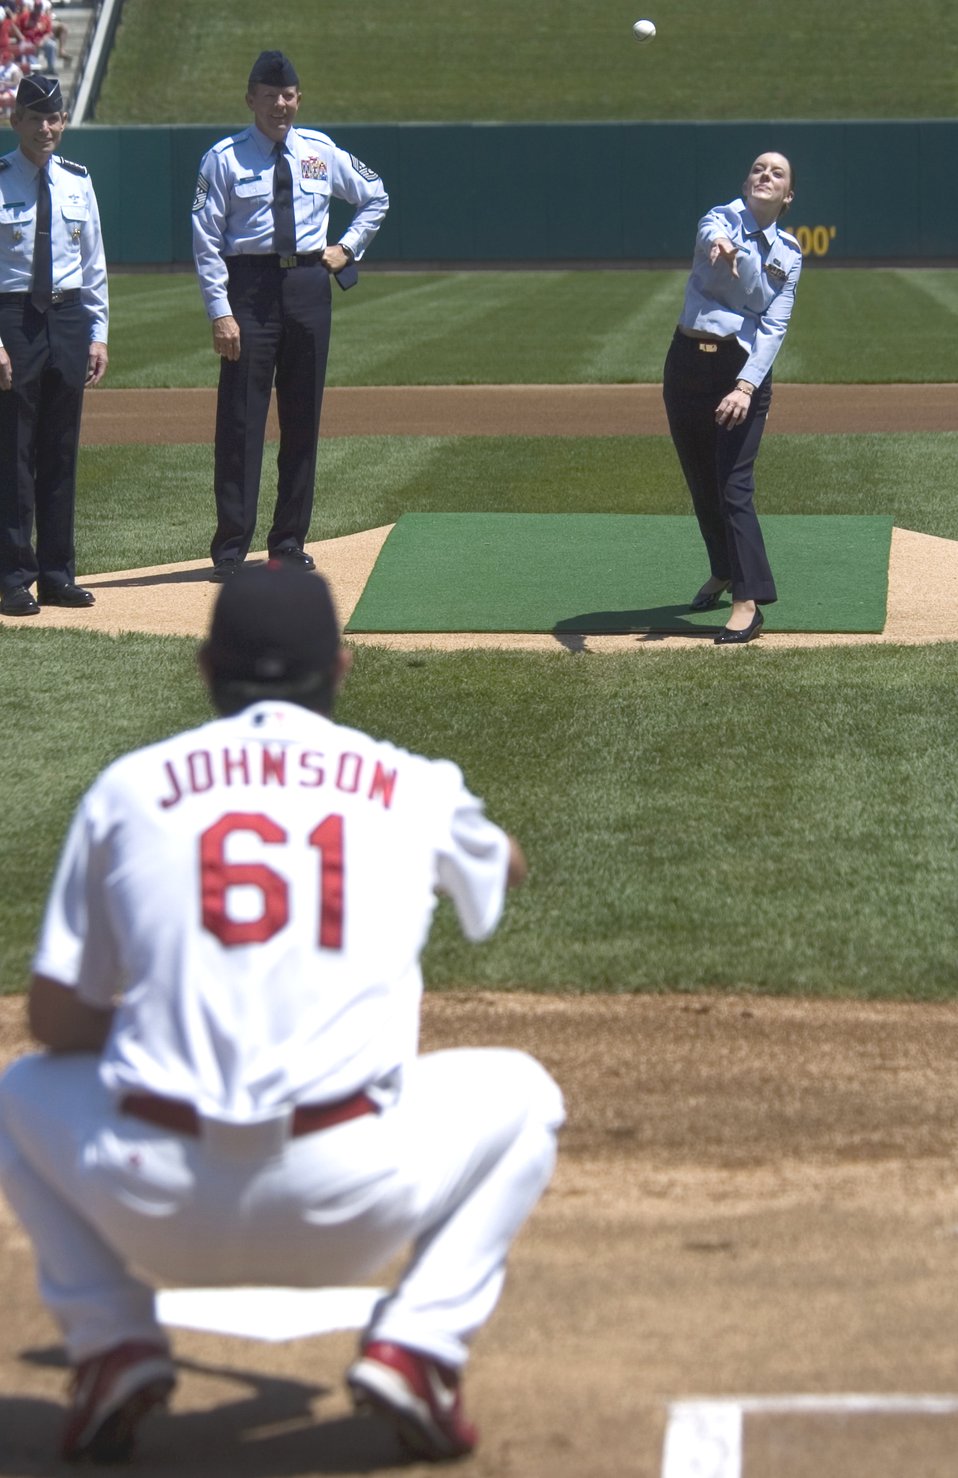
Air Force blue meets Cardinal red

Airman 1st Class Rebecca Blascak throws out the first pitch of the St. Louis Cardinals game at Busch Stadium on Aug. 6. Airman Blascak was accompied by Gen. Norton A. Schwartz, commander of the U.S. Transportation Command, and Chief Master Sgt of the Air Force Rodney McKinley. The pitch was part of a ceremony kicking off Air Force Week in St Louis. Airman Blascak is a vehicle operator with the 375th Logistics Readiness Squadron at Scott Air Force Base, Ill.